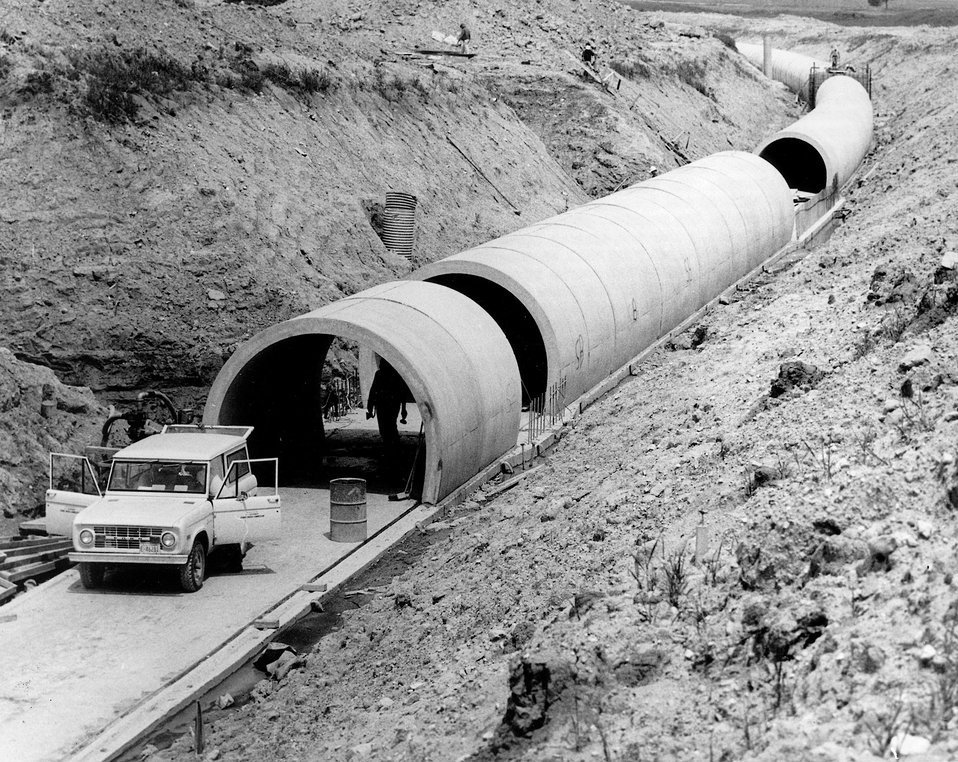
Precast concrete sections are fitted into place after being deposited in position by a special handling vehicle at the AEC NAL. c.1970